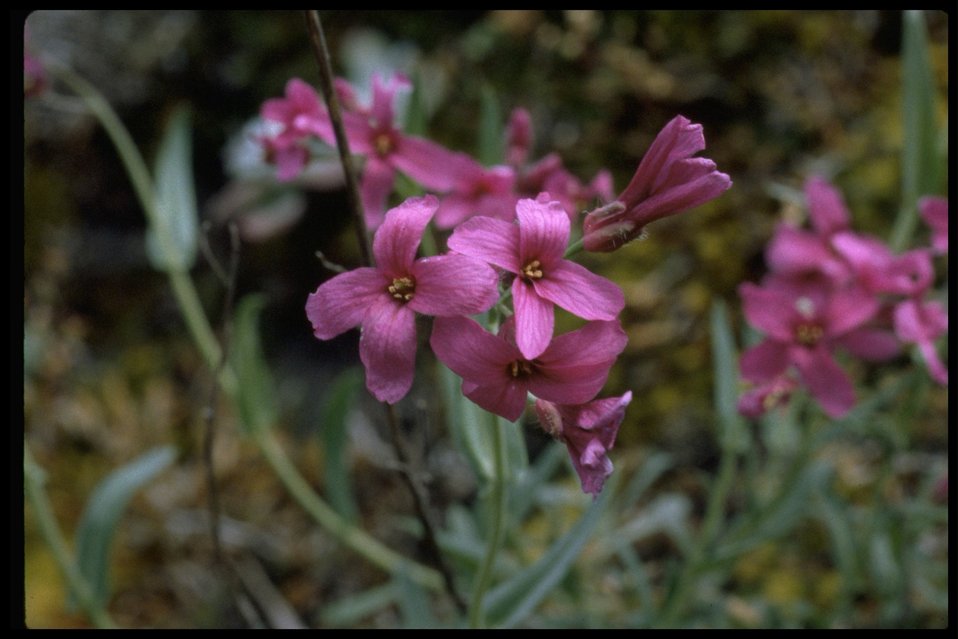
Closeup shot of shrubby rock cress (Arabis koehleri var. koehleri).